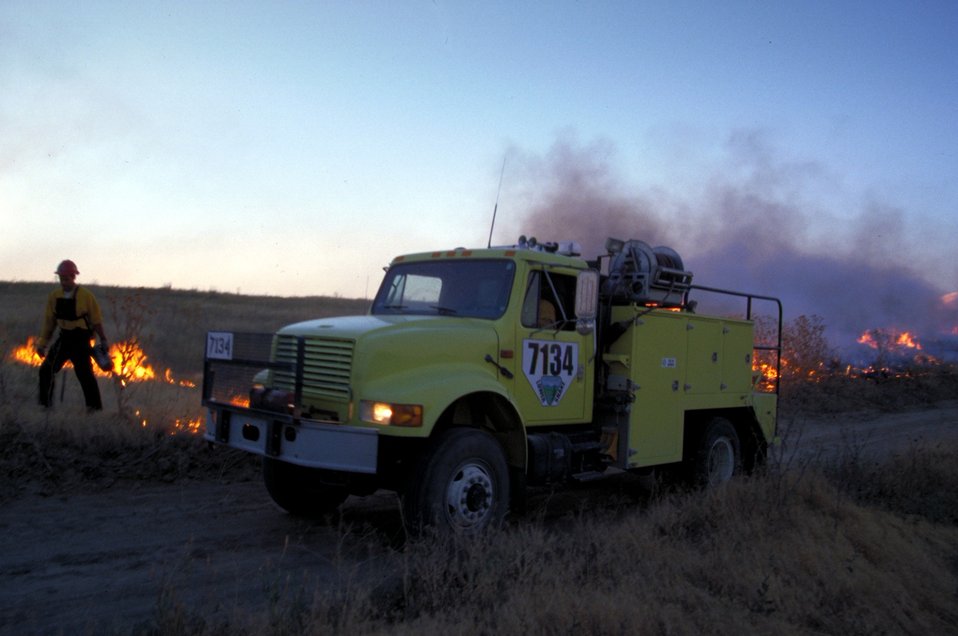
Prescribed burn Fire Season 2000 Lower Snake River District LSRD